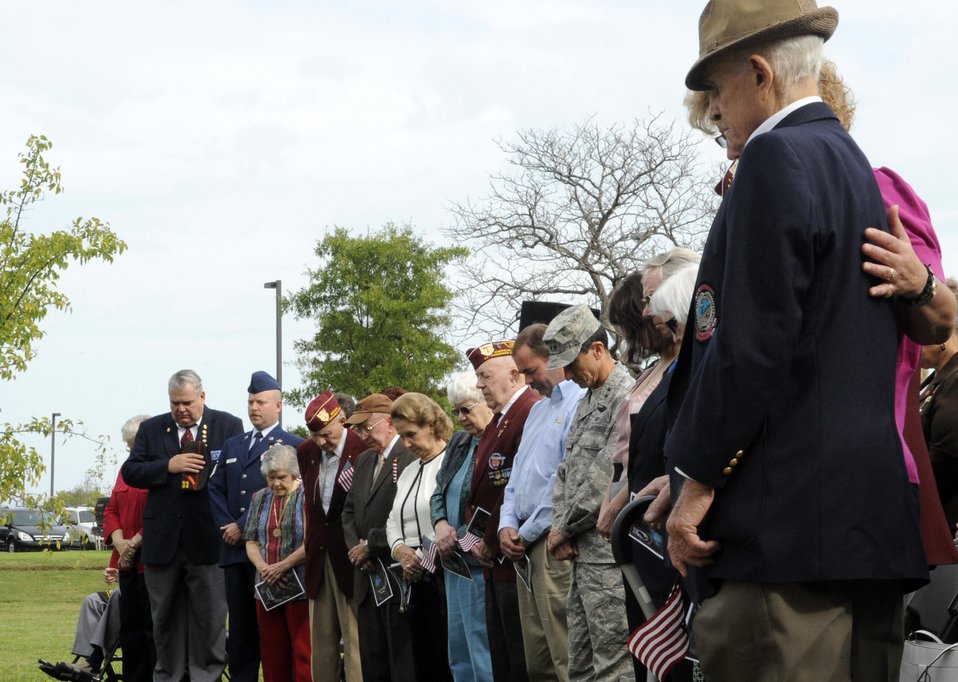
Air Combat Command honors POW/MIA Remembrance Day

Former prisoners of war and Airmen at Langley Air Force Base, Va., receive an invocation during the Prisoners of War/Missing-in-Action Memorial dedication ceremony Sept. 18, 2009. Langley Airmen were able to meet with former POWs from World War II, the Korean War and Vietnam War.